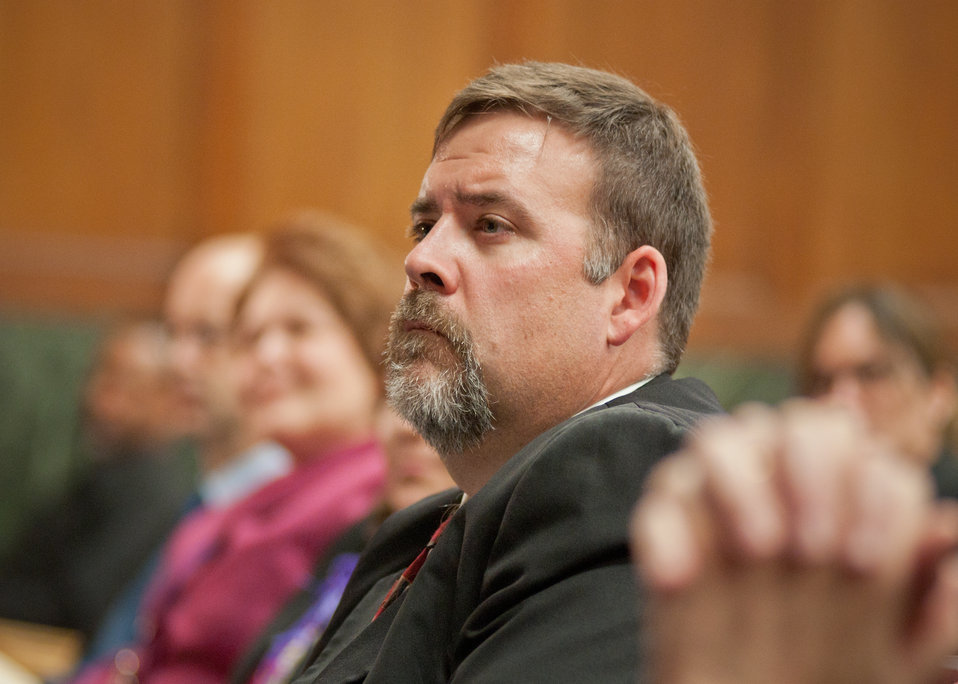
Jim Pendleton, Public Information Officer, Rural Development, Montana State Office listens to recordings of retiring employees reflecting on their accomplishments during their tenure with the agency, at the Rural Development Celebration of Service held at the United States Department of Agriculture in Washington, DC, on Wednesday, November 16, 2011.